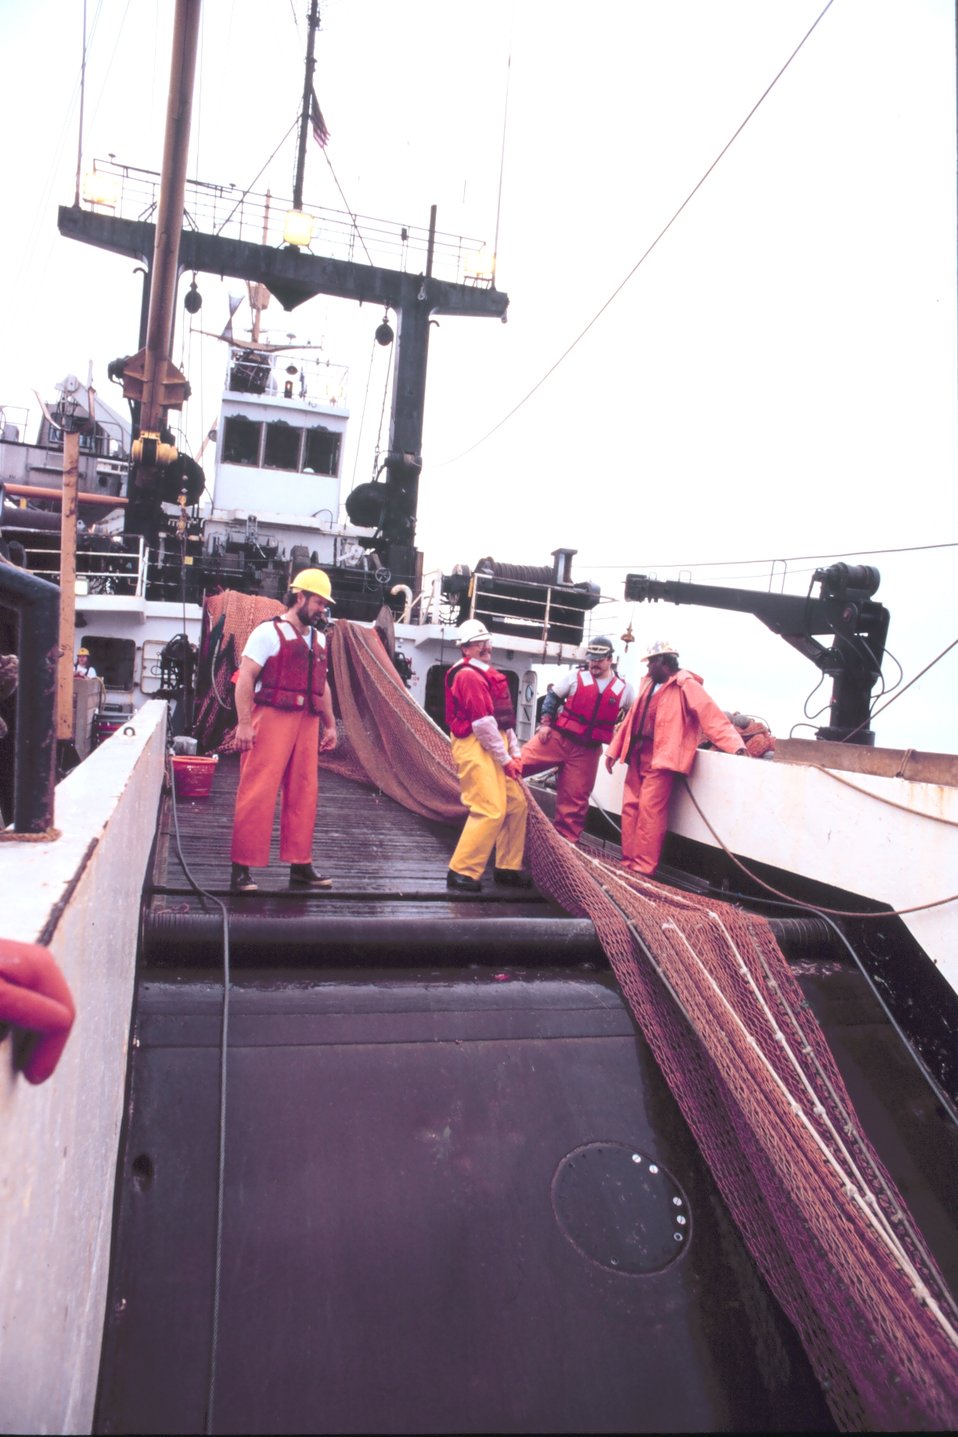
Trawling operations on the MILLER FREEMAN. Streaming the net.